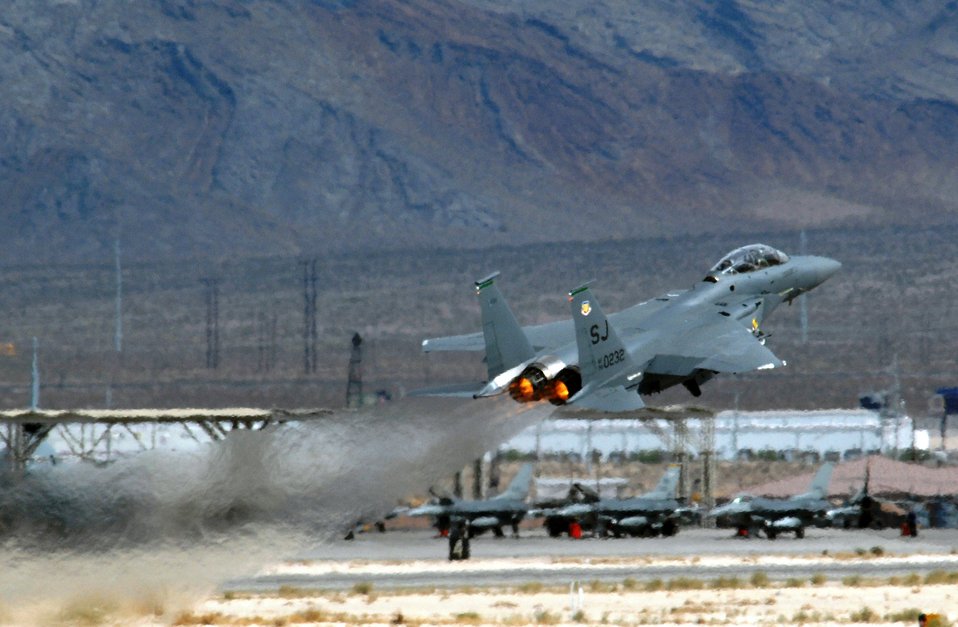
Bold Quest improves coalition combat identification

An F-15 Eagle takes off at Nellis Air Force Base, Nev. F-15s and other U.S. and coalition aircraft are participating in the Bold Quest exercise Sept. 10 to 24 at Nellis and the National Training Center at Fort Irwin, Calif.